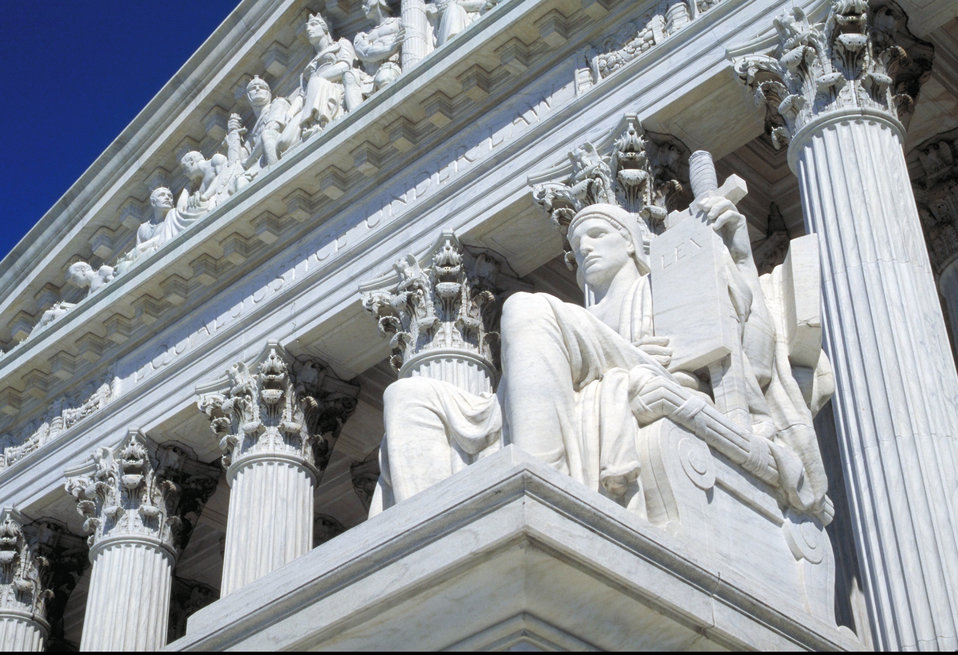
Supreme Court in Washington, DC. USDA Photo by Ken Hammond
CD1857-041